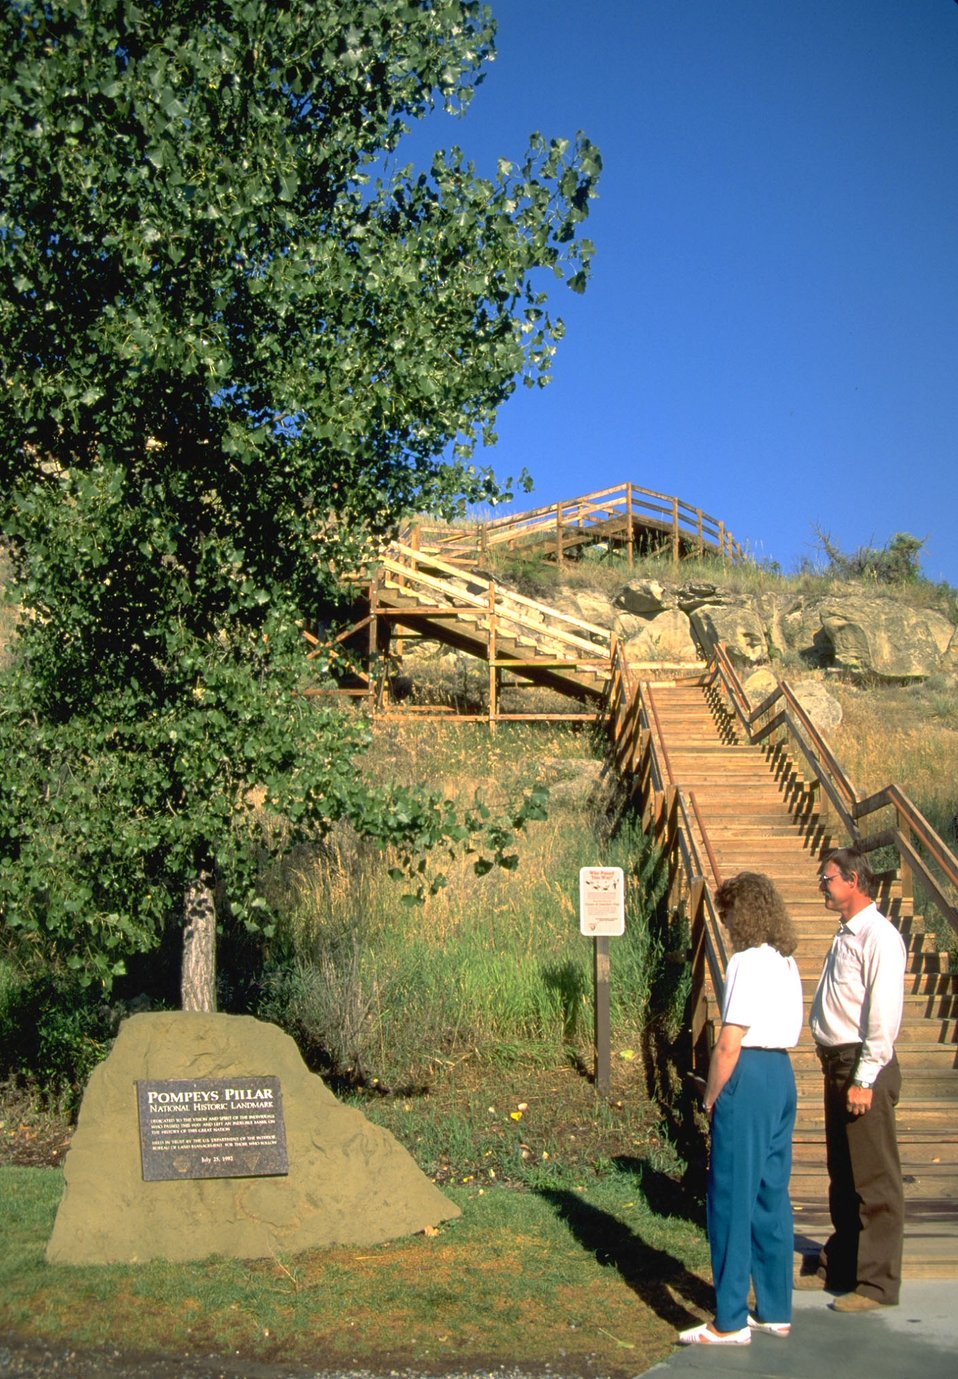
Stairs at Pompeys Pillar/tourists reading interpretive